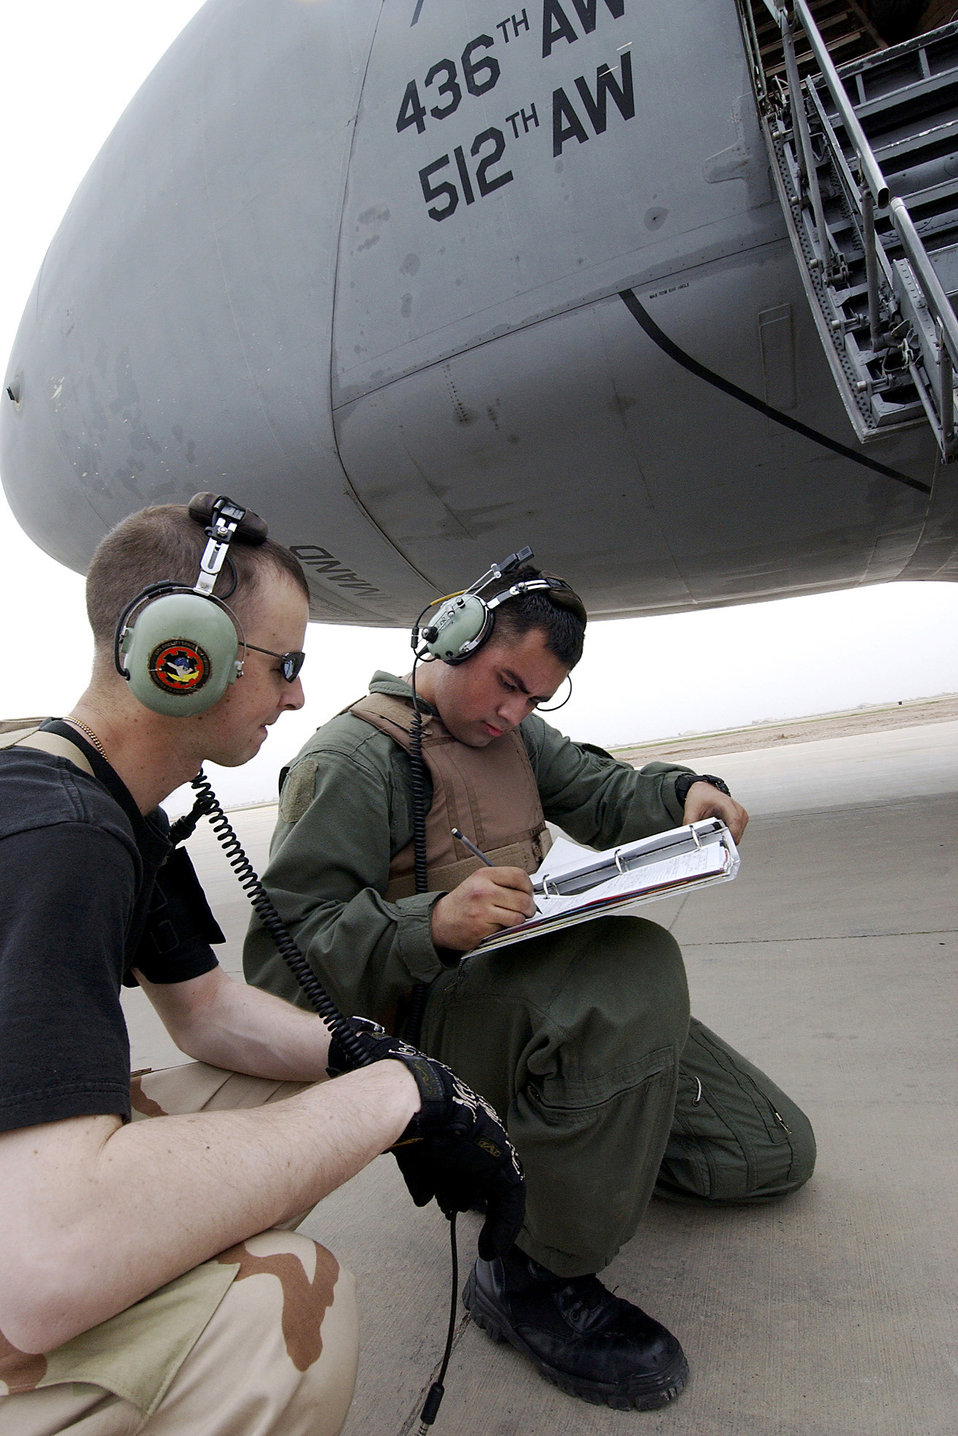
Iraqi Freedom

BALAD AIR BASE, Iraq -- Senior Airman Christopher Germain, left, and Senior Airman Jesus Ordaz finish signing their inspection sheets after conducting a preflight inspection on a C-5 Galaxy here March 6. Airmen Germain and Ordaz are both crew chiefs with the 332nd Air Maintenance Squadron.